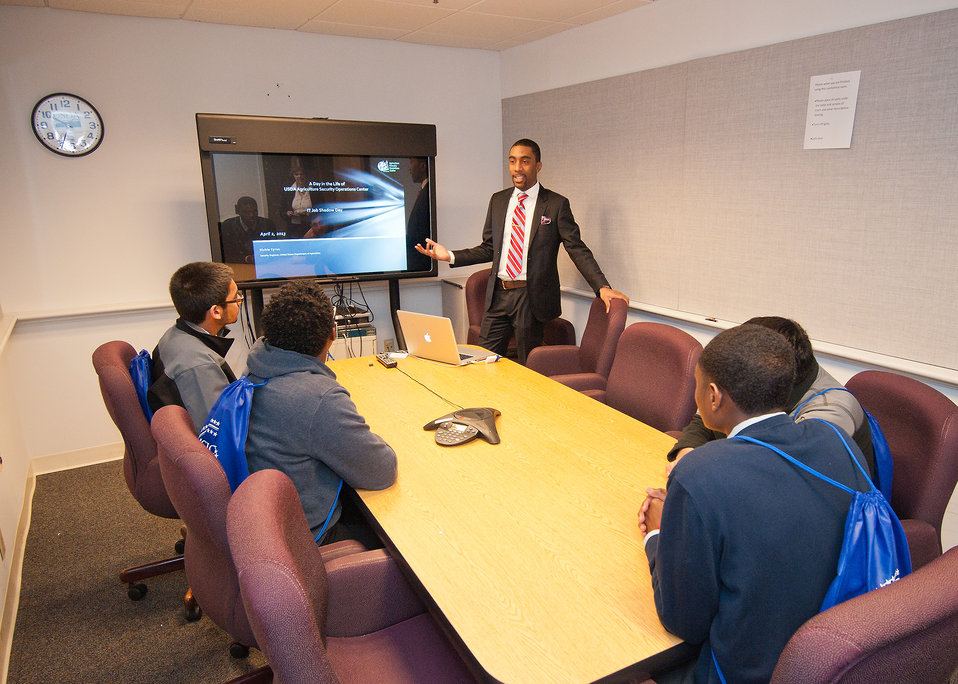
U. S. Department of Agriculture (USDA) Cyber Security specialist Richie Cyrus explains cyber security to students from Edison Academy in Fairfax, VA during the annual USDA Information Technology (IT) Job Shadow Day held by the USDA Office of the Chief Information Officer (OCIO) to introduce local high school students to careers in information technology in Washington, D.C. on Tuesday, Apr. 2, 2013.